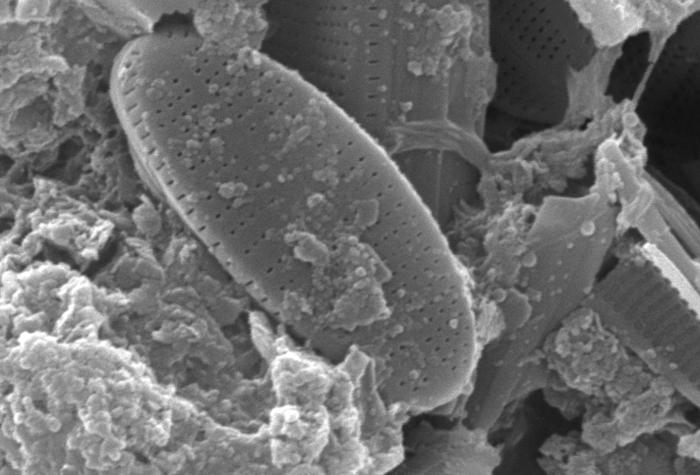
This scanning electron micrograph (SEM) of an untreated water specimen extracted from a wild stream mainly used to control flooding during inclement weather, revealed the presence of unidentified organisms, which included bacteria, protozoa, and algae. In this particular image, a number of unidentified oblong elliptical-shaped diatoms were featured.